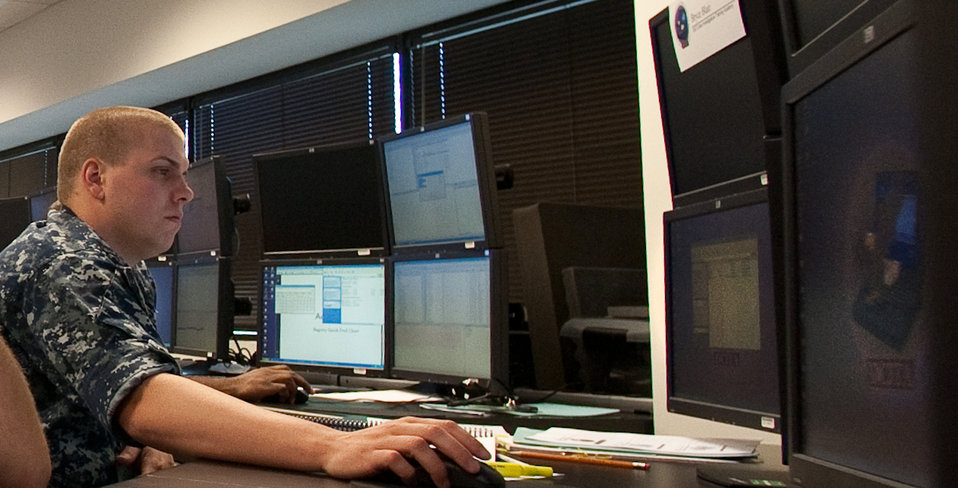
A close look at DoD Cyber Crime Center

Petty Officer 2nd Class Bryce Blair listens to his instructors directions for Hash analysis in Windows forensic examinations using EnCase Sept. 9, 2010, at the Defense Cyber Investigations Training Academy in Linthicum, Md. Petty Officer Blair is from the Naval Criminal Investigative Service.